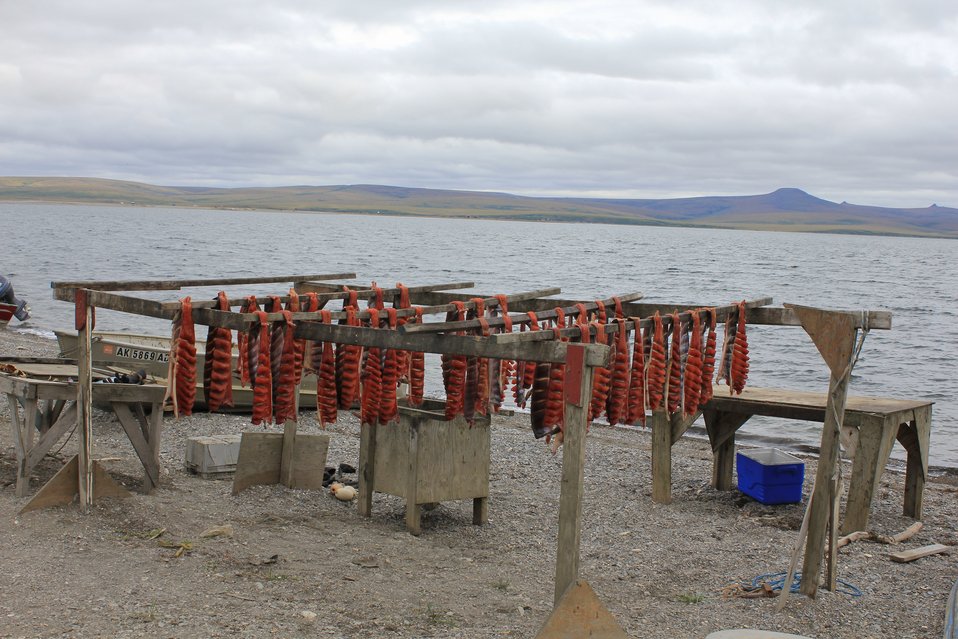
Fish drying racks. Silver or coho salmon drying that have been cut back to the skin to make what is called dryfish. The fish has also been a little bit smoked to drive off the moisture on the surface which discourages flies from laying eggs.